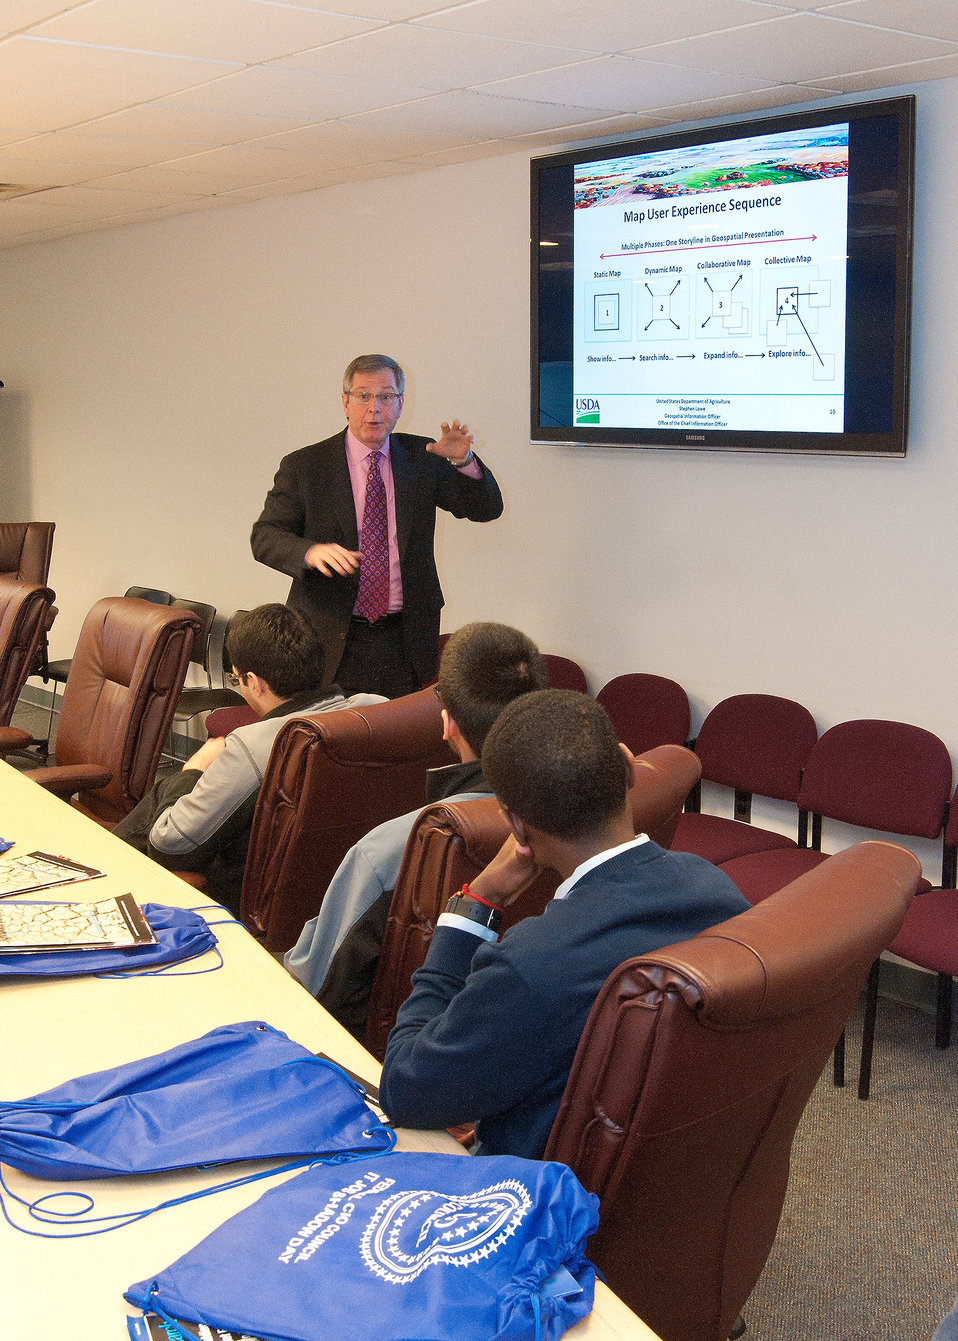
Stephen Lowe explains Geospatial Support Services to students from Edison Academy in Fairfax, VA during the annual U.S. Department of Agriculture’s (USDA) Information Technology (IT) Job Shadow Day held by the USDA Office of the Chief Information Officer (OCIO) to introduce local high school students to careers in information technology in Washington, D.C. on Tuesday, Apr. 2, 2013.